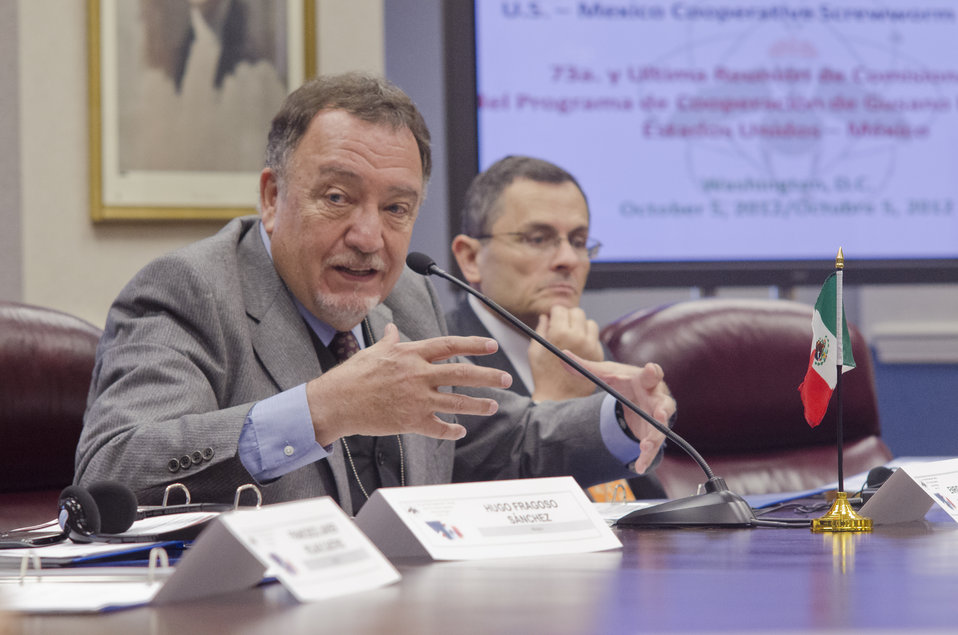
Mexican Agriculture and Food Safety Chief Dr. Enrique Sanchez Cruz speaks at the U.S. Department of Agriculture’s (USDA) 73rd and Final Commissioners Meeting of the U.S. – Mexico Cooperative Screwworm Program in the Williamsburg room at USDA in Washington, D.C. on Oct. 5, 2012.